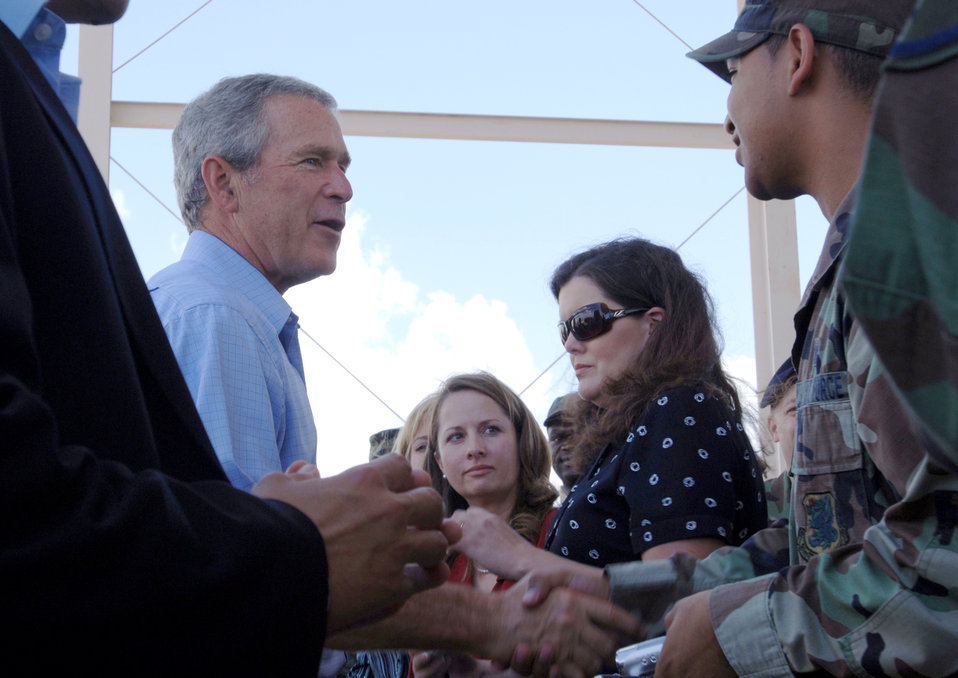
President Bush visits Keesler

President George W. Bush meets with Airmen and civilians during a stop at Keesler Air Force Base, Miss., today. The president met Airmen and civilians from Keesler AFB during his visit to the Gulfport region in Mississippi to view the area devastated by Hurricane Katrina one year ago.